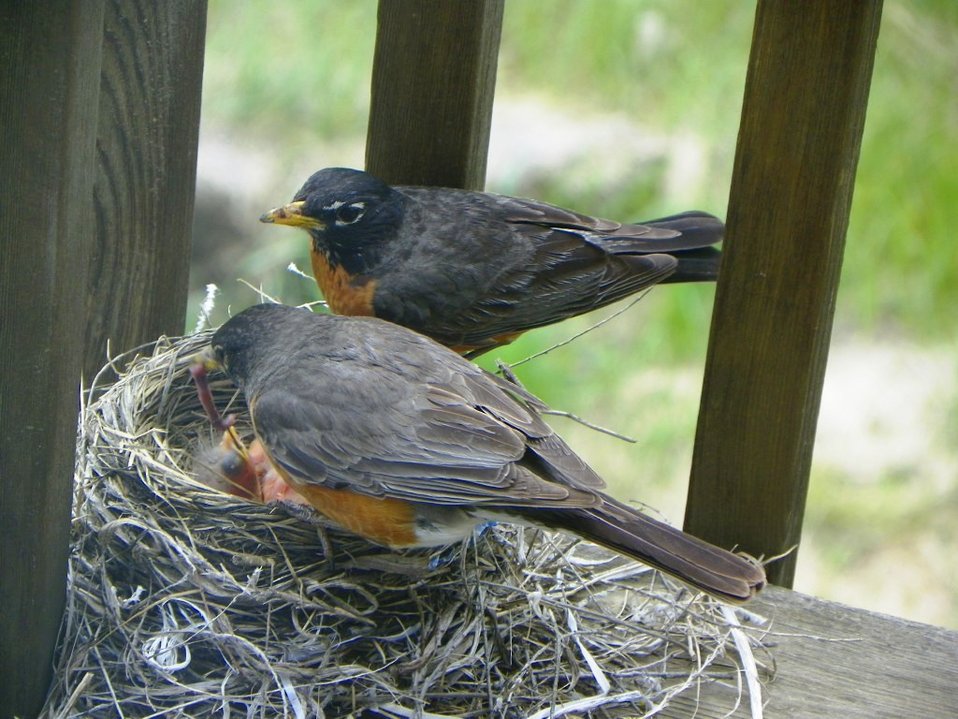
Robin Family

Two-day-old robins are cared for by both parents.

Location: Pierre, SD

Credit: Shelley Erickson / USFWS

Photo Contest Entry #184